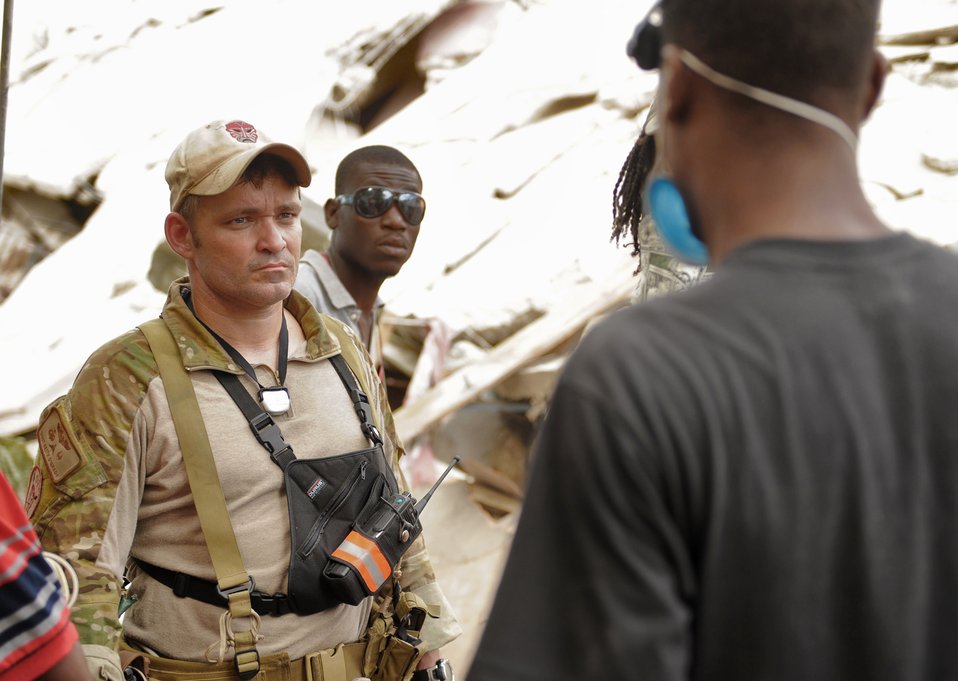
Haiti Earthquake Relief

Master Sgt. Keith O'Grady listens as a Haitian man tell him about potential rescue sites in Port-au-Prince, Haiti, Jan 17, 2010. Sergeant O'Grady is assigned to the 23rd Special Tactics Squadron at Hurlburt Field Fla. Department of Defense assets have been dispatched to Haiti to assist with humanitarian assistance and disaster relief after a magnitude 7 earthquake hit the country Jan. 12, 2010.